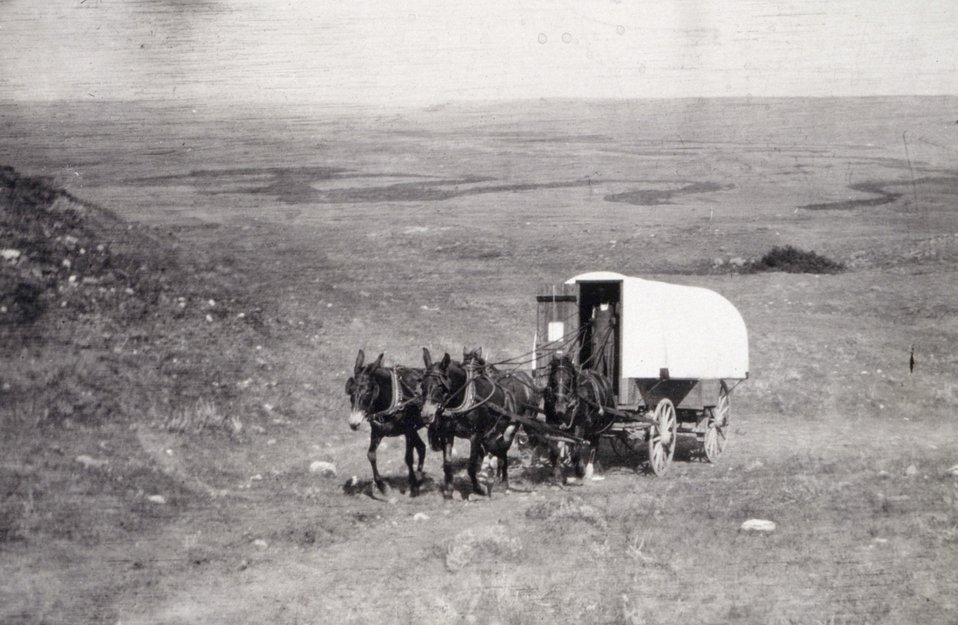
Transportation outfit - party of E.R. Martin. International Boundary Commission. Continental Divide to Lake of Woods